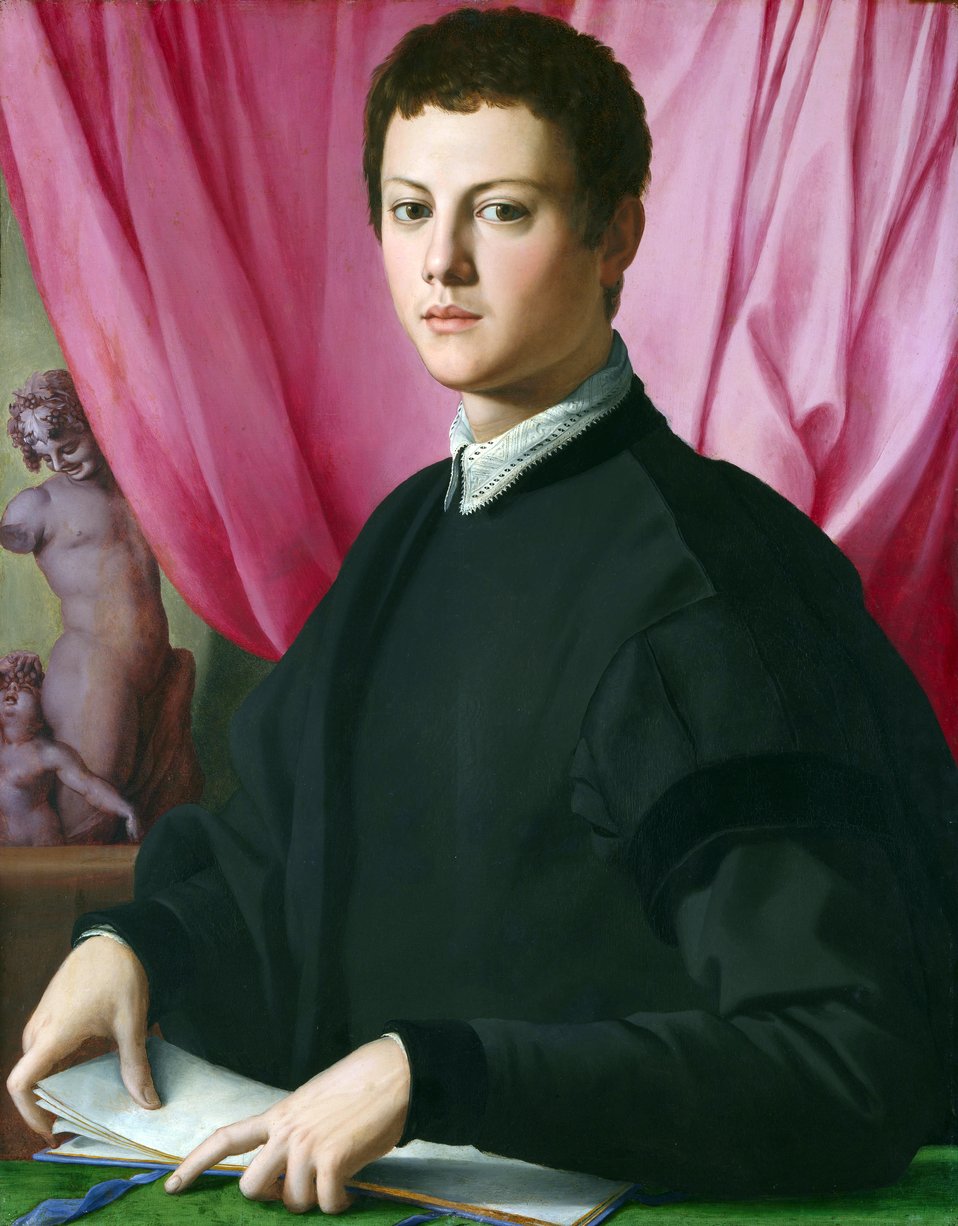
Angelo Bronzino - Portrait of a Young Man